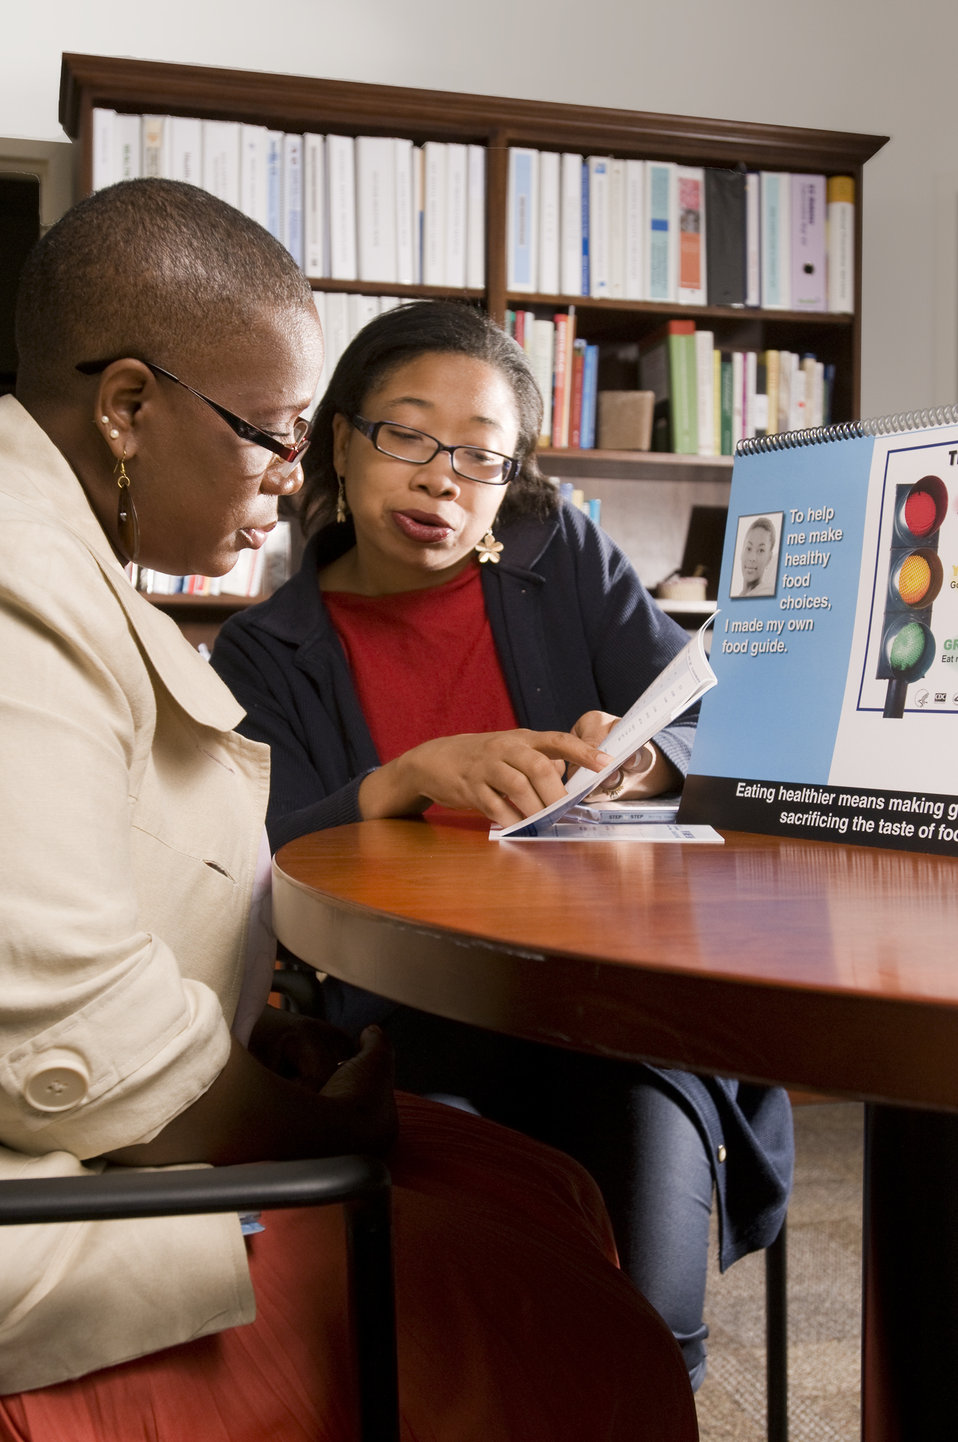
This image depicts a person with diabetes in the foreground listening to a community health worker familiar with the necessary diet needed to maintain control over the detrimental effects of this disease. The health worker was using a flip chart that, for the moment, was turned to a page discussing the use of the 'Traffic Light Method' to label foods. Here, the dietary specialist was providing answers to questions posed by the patient regarding the three food groups, by including some further literary content germane to the dietary topic.